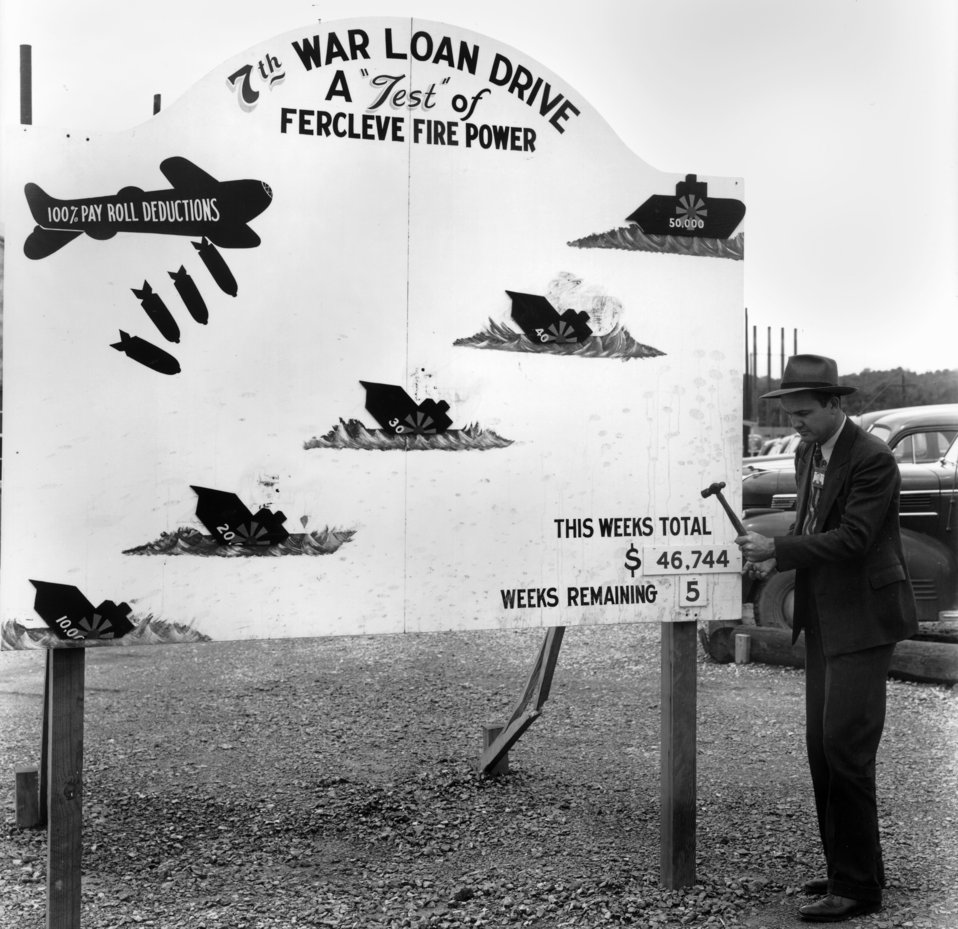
Billboard

S-313 DOE photo by Ed Westcott

Billboard showing total payroll deduction far 7th war loan drive Oak Ridge Tennessee 1944